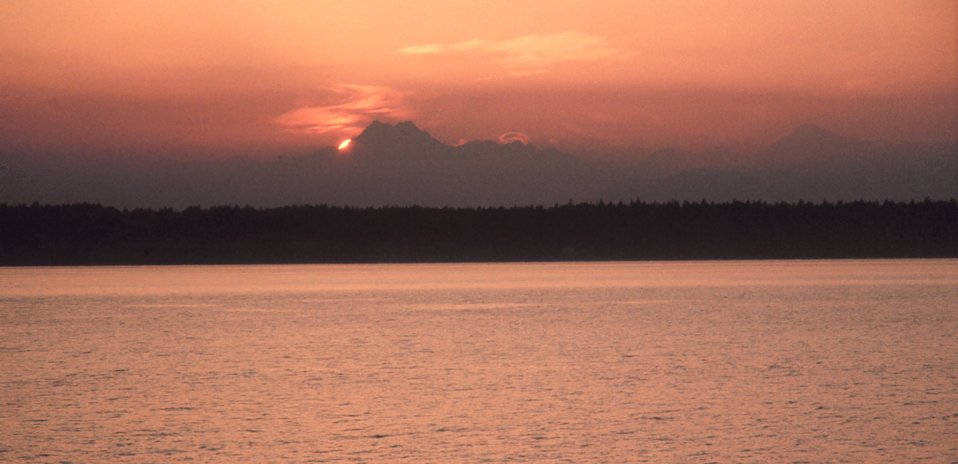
British Columbia sunset